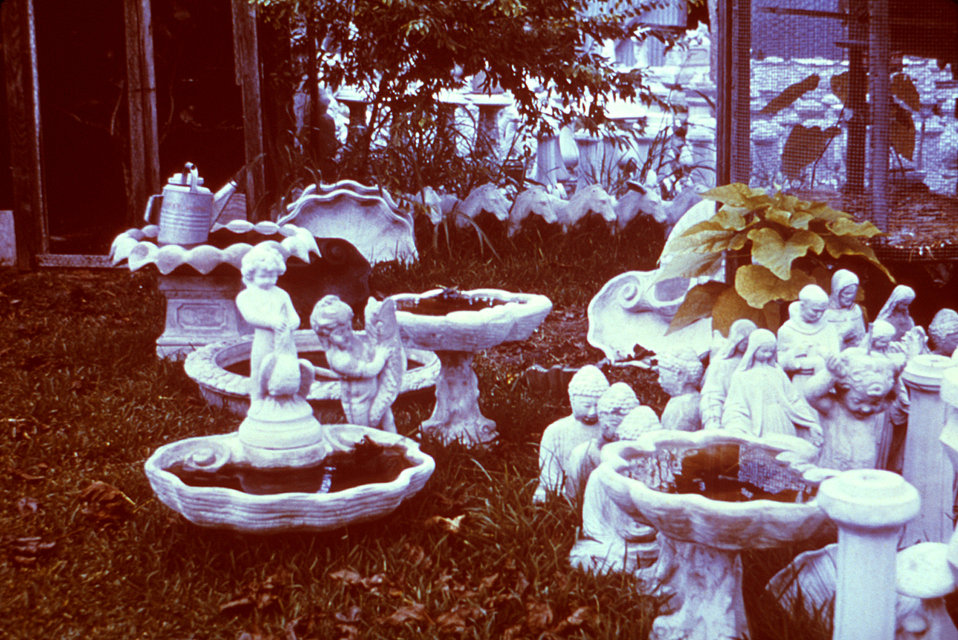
This photograph depicts a Houston, Texas concrete statuary business's outdoor storage facility, which became a breeding ground for Aedes aegypti, and Culex quinquefasciatus mosquitoes due to the presence of water collections within the statues where females could deposit their eggs. This took place during a 1964 St. Louis Encephalitis (SLE) epidemic.